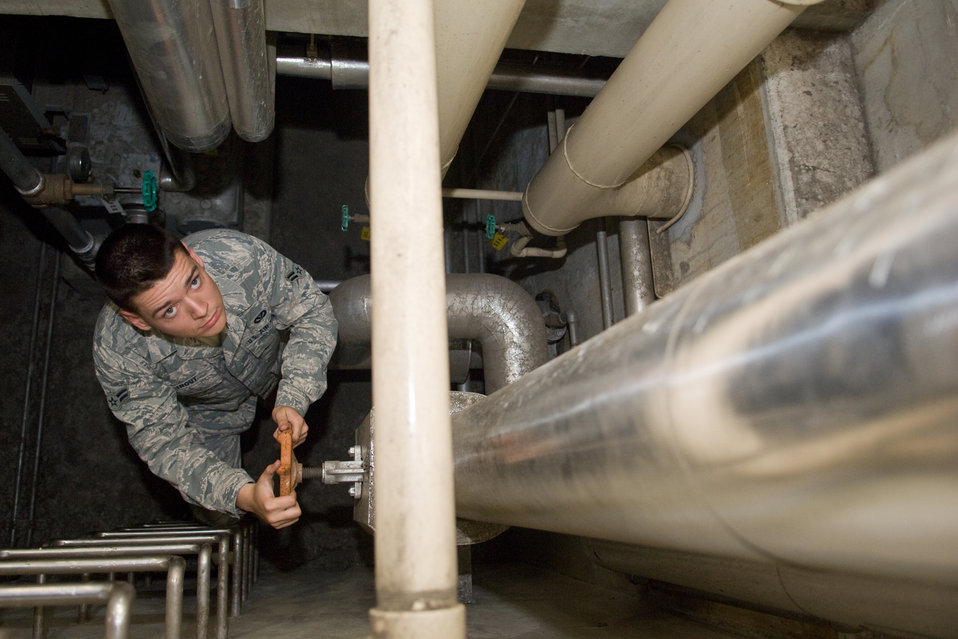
We make Yokota warm1

Airman 1st Class Jacob Trout checks the air flow in underground heating valves before operating the system Oct. 14, 2010 at Yokota Air Base, Japan. Airman Trout is a heating, ventilation and air conditioning technician with the 374th Civil Engineer Squadron.